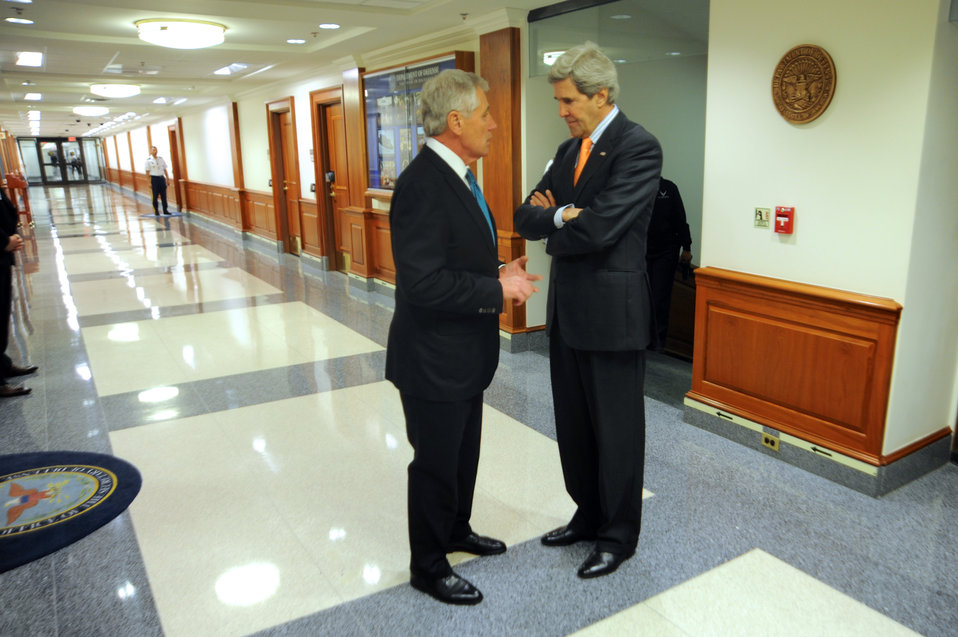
Secretaries Kerry, Hagel Speak Before Pentagon Meeting

U.S. Secretary of State John Kerry speaks with Defense Secretary Chuck Hagel before the two addressed the nation's top military commanders at the Pentagon on January 16, 2014.